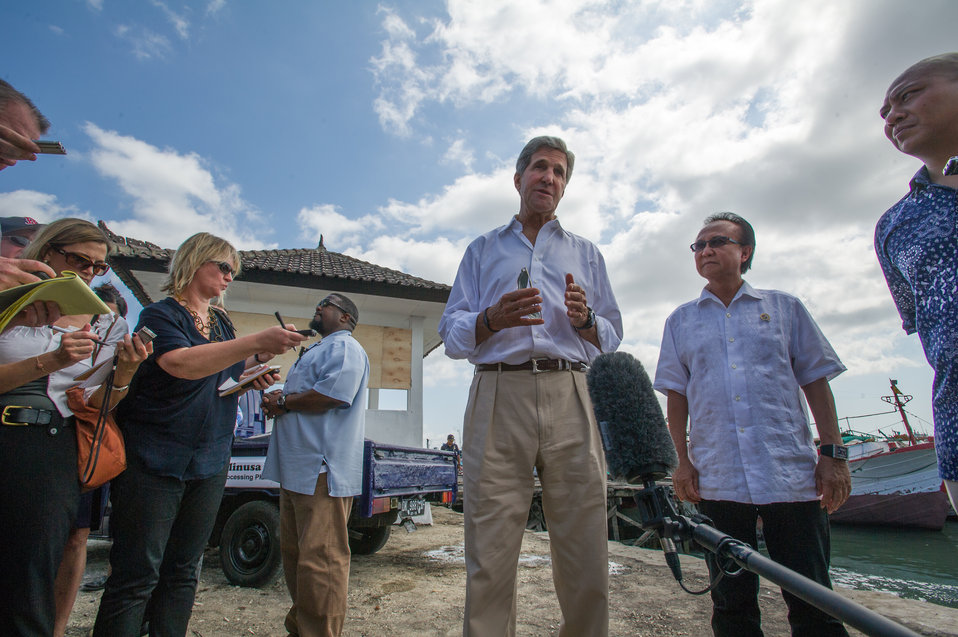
Secretary Kerry Delivers Remarks to the Press at Benoa Port, Indonesia

U.S. Secretary of State John Kerry discusses the recent U.S.-led operations against terrorists in Somalia and Libya and the importance of sustainable fishing practices and protecting the oceans during his visit to Benoa Port, Bali, Indonesia, October 6, 2013. A text transcript of the Secretary's remarks can be found here: www.state.gov/secretary/remarks/2013/10/215155.htm.